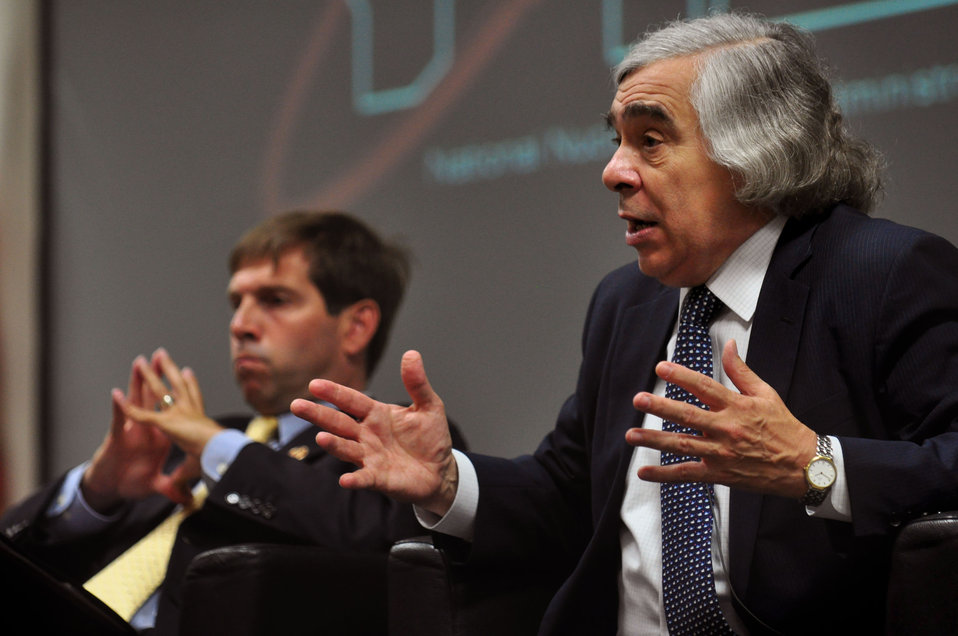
DOE Secretary of Energy Ernest Moniz in Oak Ridge

13-064 DOE photo Lynn Freeny 6-20-2013 Oak Ridge Tennessee